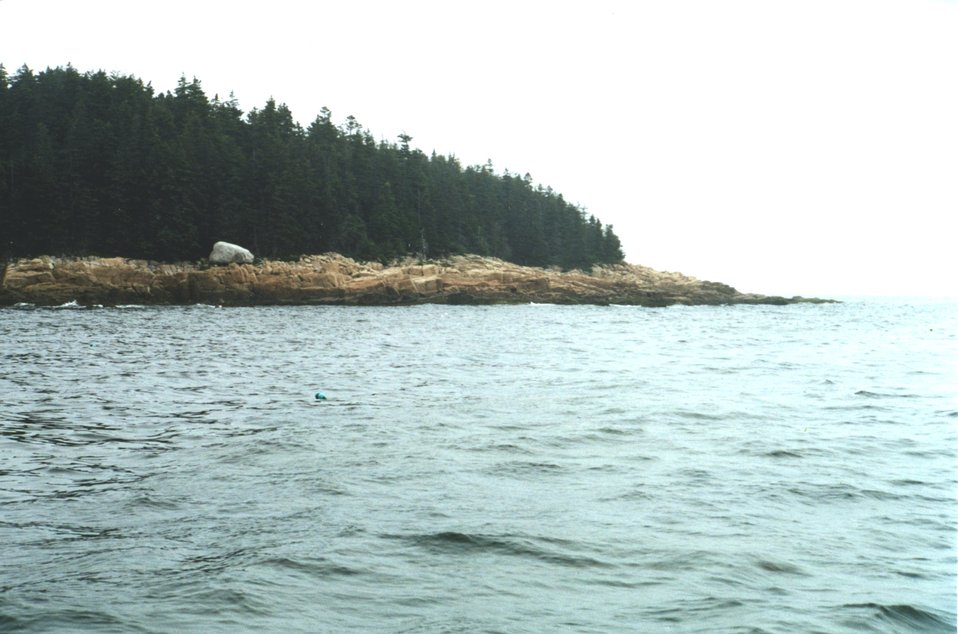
Glacial erratic boulder (white boulder in left center) trapped on eroding granite shoreline.